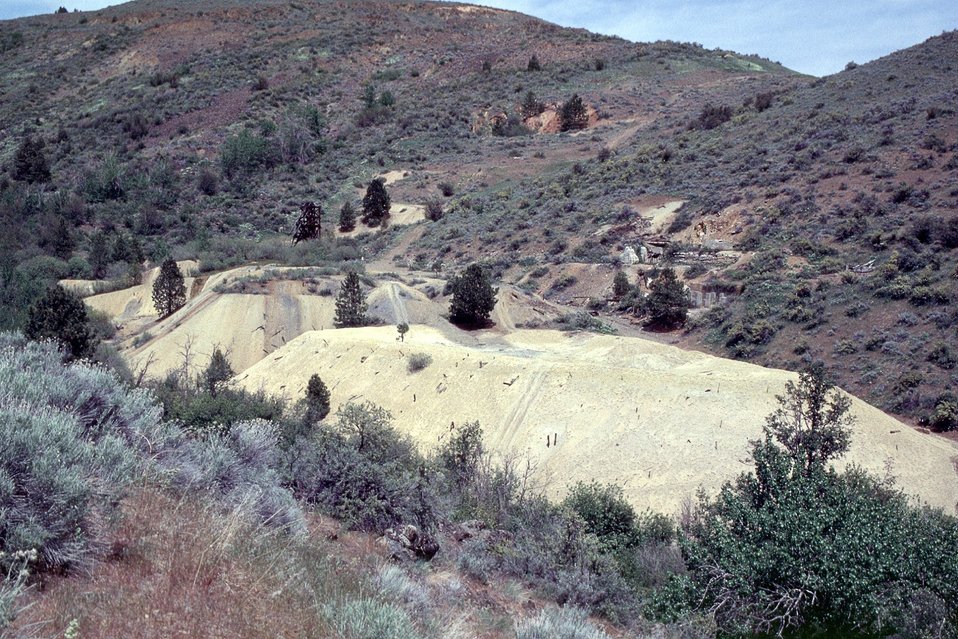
Tailings at AML Poorman, Vale District, Oregon.